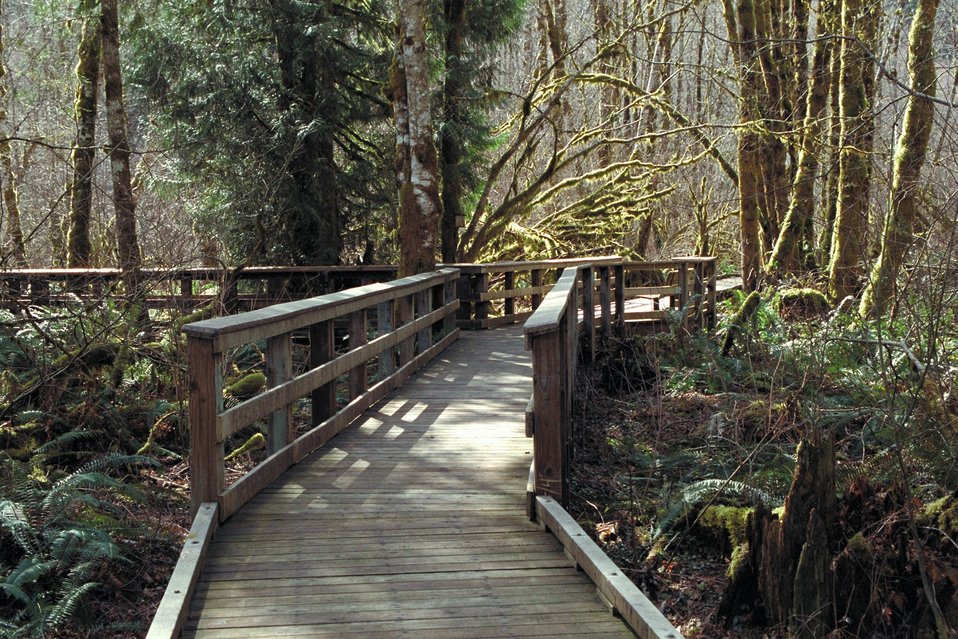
Cascade Stream Watch is an environmental education program conducted at BLM's Wildwood Recreation site.